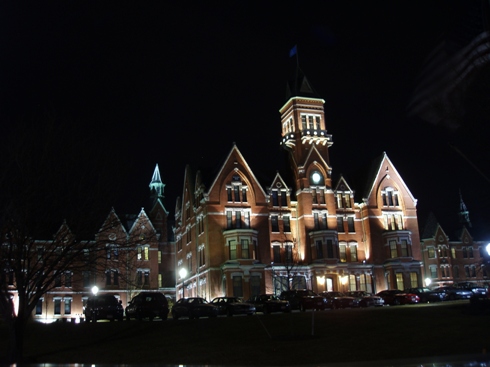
taken by me, 2008 danvers state hospital ma.